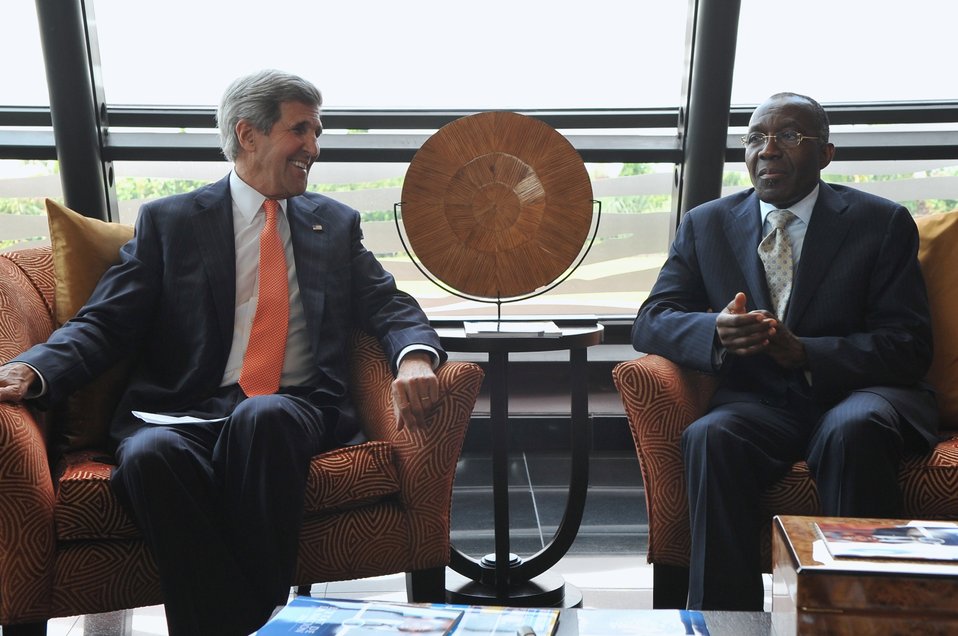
Democratic Republic of Congo Foreign Minister Tshibanda Welcomes Secretary Kerry

Democratic Republic of Congo Foreign Minister Raymond Tshibanda addresses reporters after U.S. Secretary of State John Kerry arrived in Kinshasa on May 3, 2014.